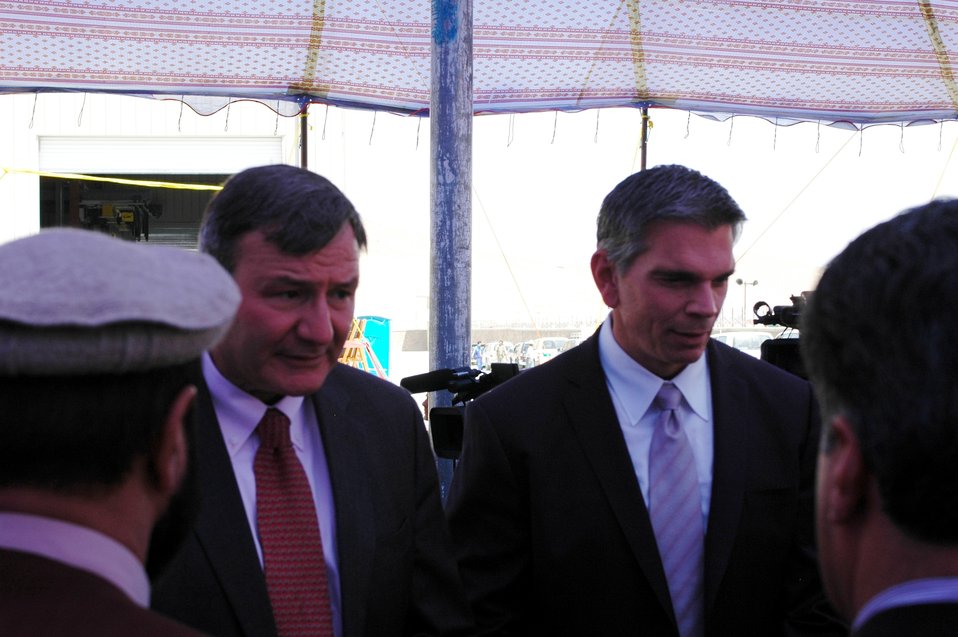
105 MW Tarakhil Power Plant Handover